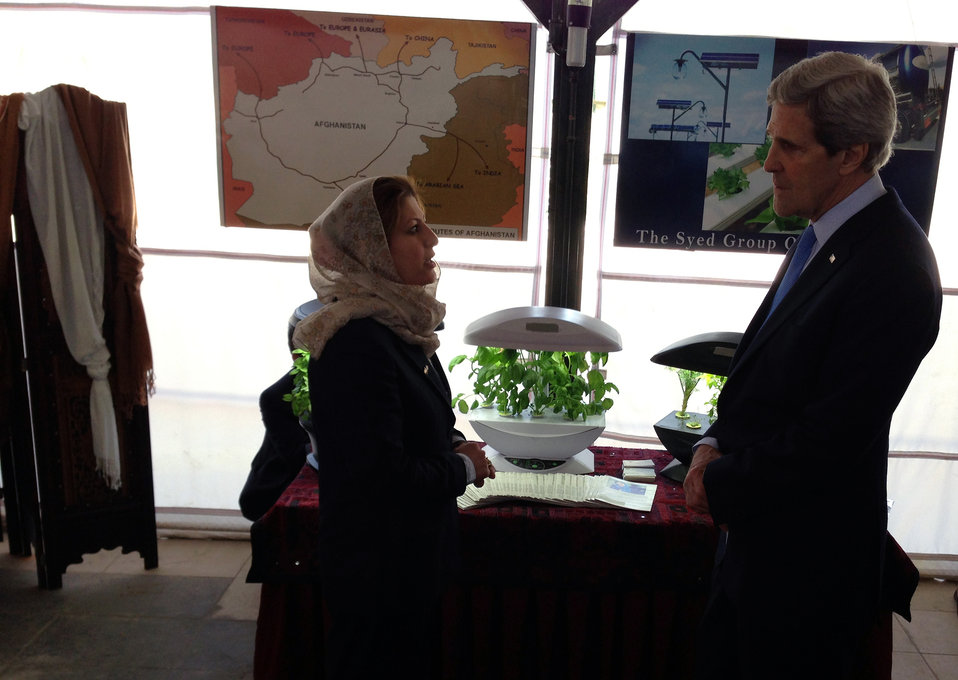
Secretary Kerry Tours Women’s Entrepreneurship Showcase in Kabul

U.S. Secretary of State John Kerry visits with Hassina Syed, founder and president of the Syed Group of companies, which has businesses in logistics, food manufacturing and catering, construction, trade, truck sales, and tourism and hospitality during a tour of local businesses in Kabul, Afghanistan on March 26, 2013.